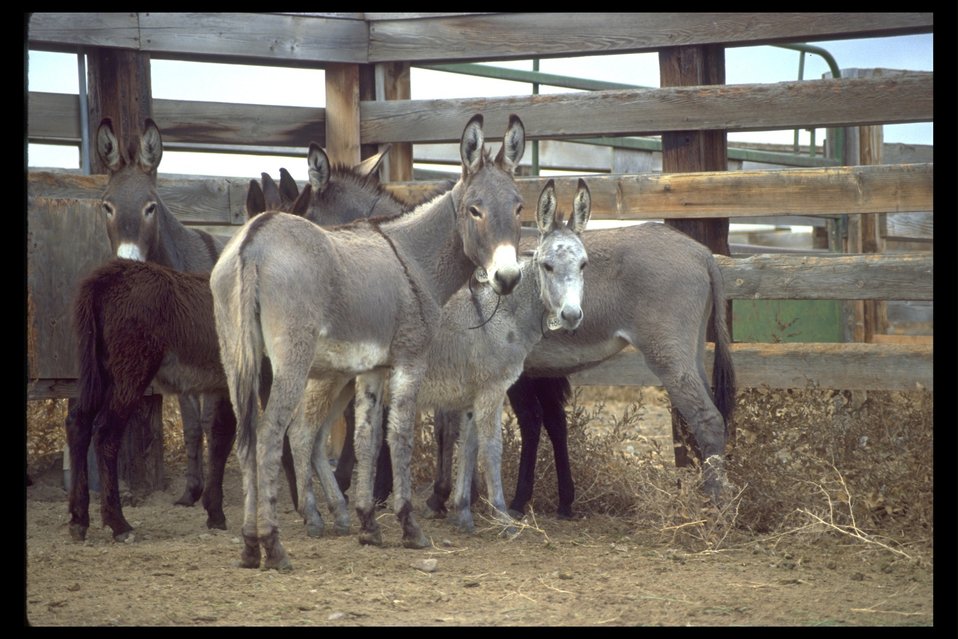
Wild burros from California desert awaiting adoption at Burns Wild Horse Corrals.